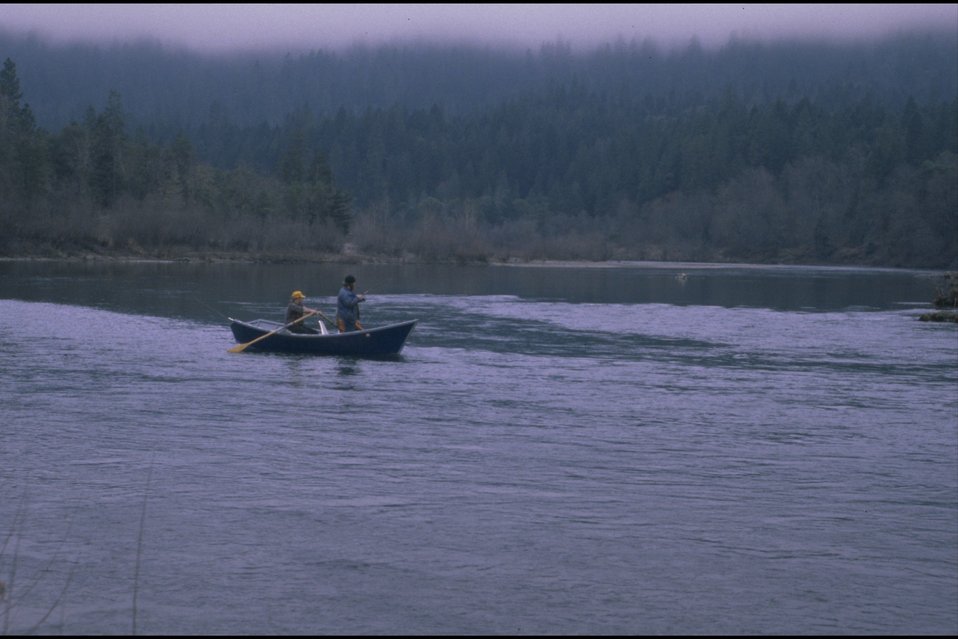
Rogue River - Hellgate Recreation Area, catching steelhead.